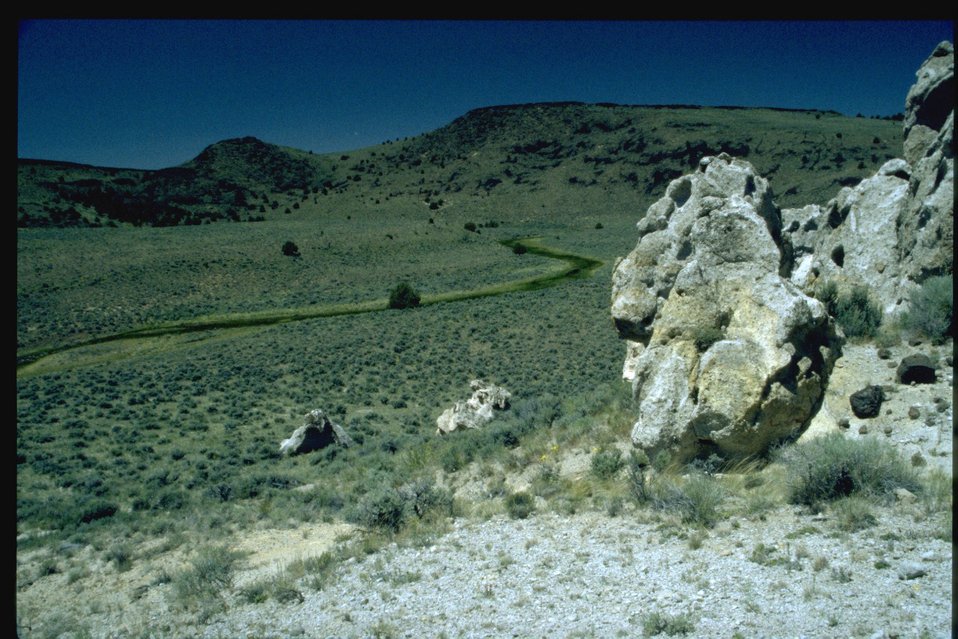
Scenic view of Guano Creek.